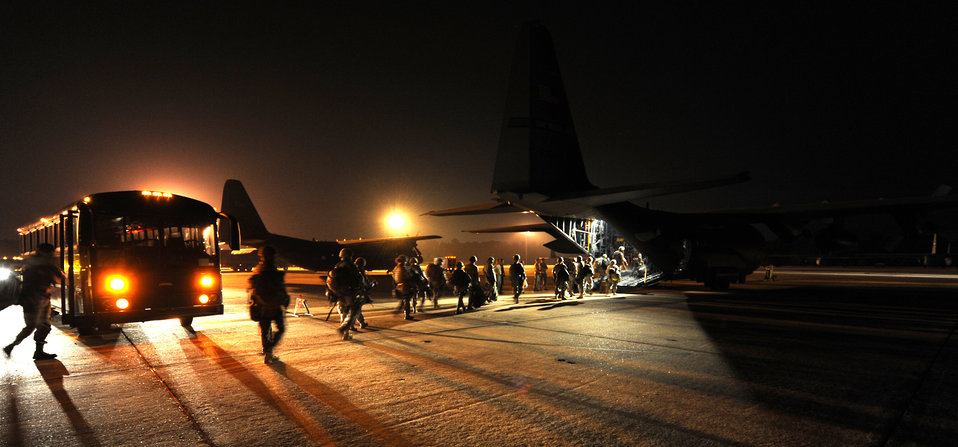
All aboard!

Airmen board a C-130 Hercules June 4, 2011, during an operational readiness exercise at Little Rock Air Force Base, Ark.